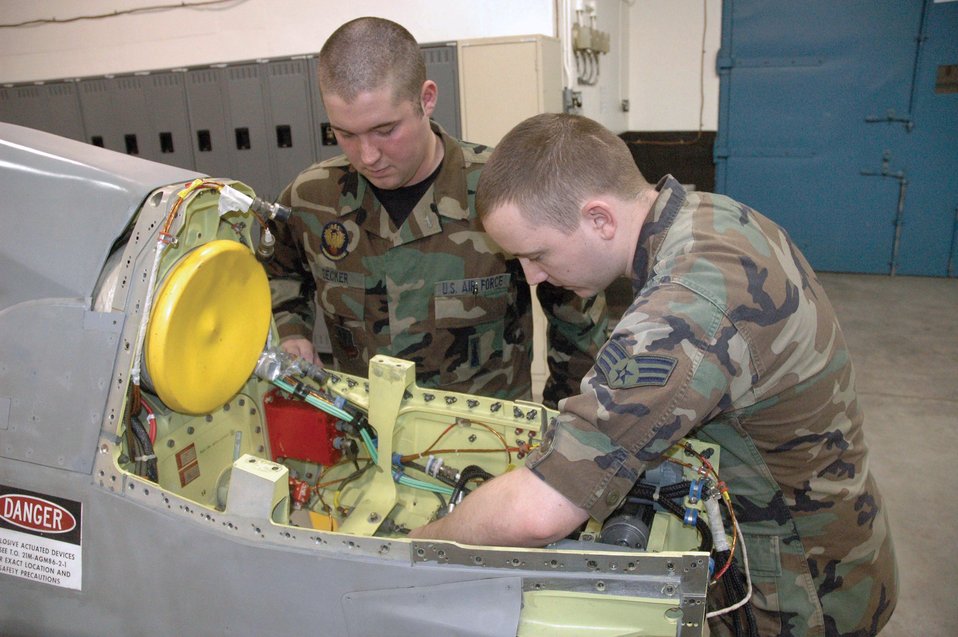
Airmen maintain national defense inside weapons storage area

MINOT AIR FORCE BASE, N.D. -- Senior Airmen Justin Decker (left) and Shiloh Feigley examine an air-to-ground missile in the weapons storage area here. The B-52 Stratofortress can hold up to 20 of these missiles. The Airmen are missile and space systems electronic maintainers with the 5th Munitions Squadron.